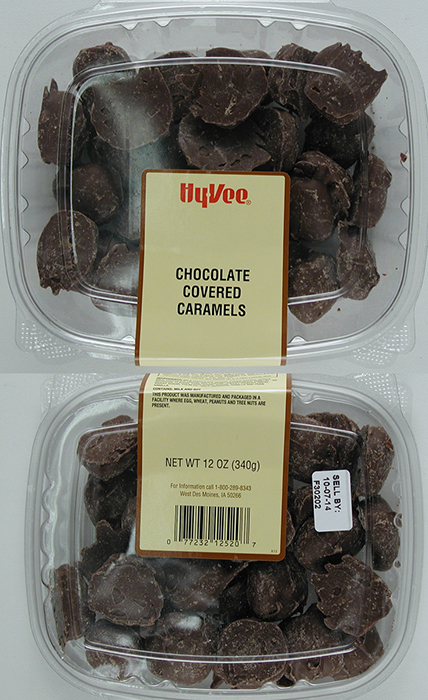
RECALLED – Chocolate Caramel Clusters and Chocolate Covered Caramels

November 11, 2013 – Product Recall – Palmer Candy Company Voluntarily Recalls HyVee Chocolate Caramel Clusters and HyVee Chocolate Covered Caramels Due to Undeclared Peanut Allergen.